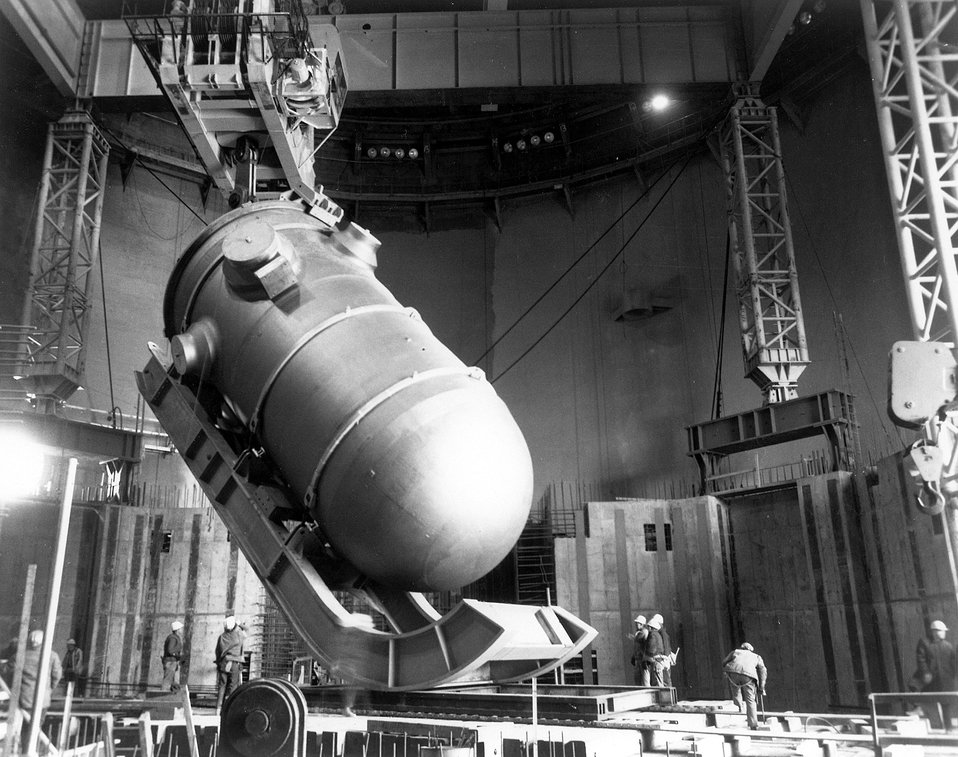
Baltimore Gas and Electric's Calvert Cliffs Nuclear Power Plant. Reactor vessel inside the containment building being raised to the vertical position. Circa 1971.